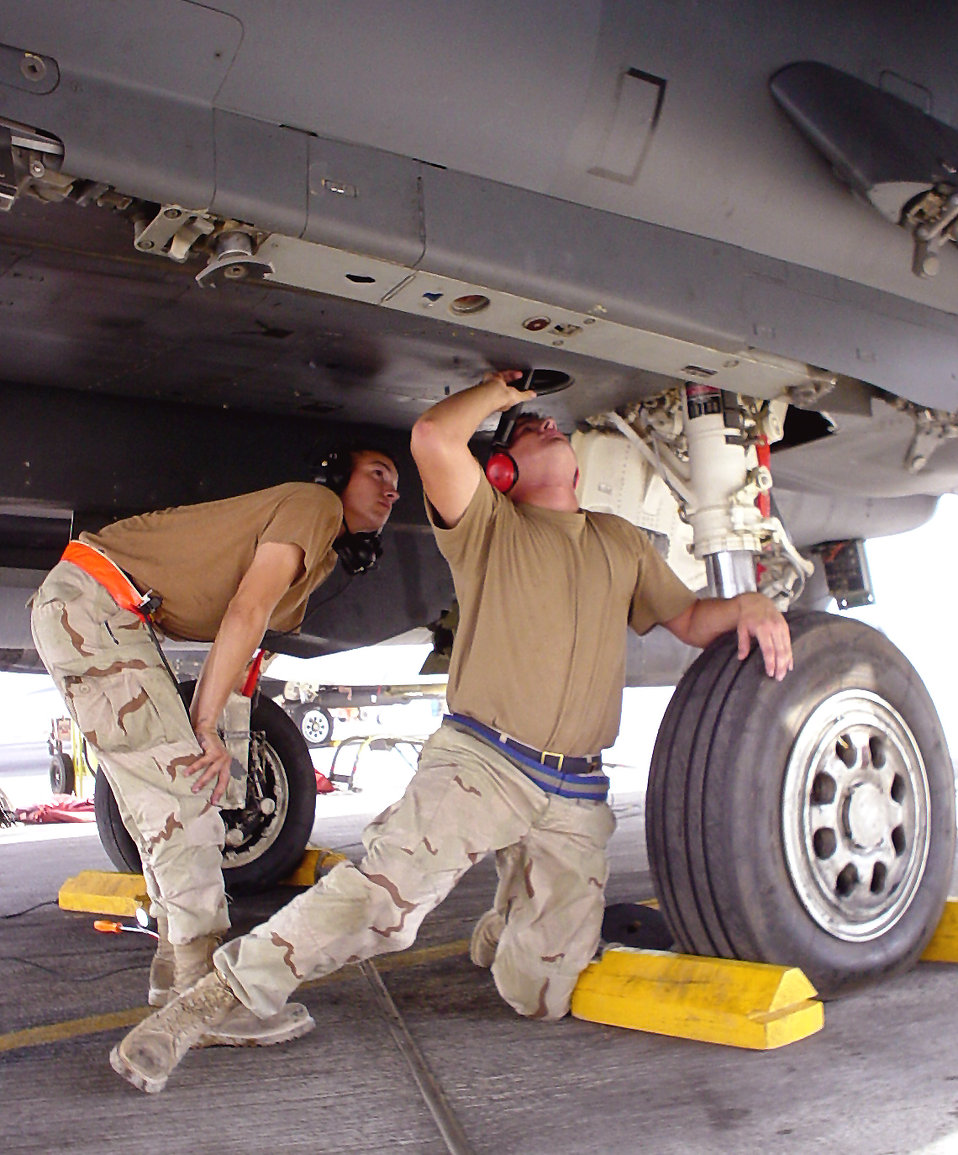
Routine engine inspection

SOUTHWEST ASIA -- Airman 1st Class Chris Gibson (left) and Staff Sgt. Eric Alder search for leaks during a routine engine inspection on an F-15E Strike Eagle at a forward-deployed location Sept. 24. Both crew chiefs are assigned to the 379th Expeditionary Aircraft Maintenance Squadron and are deployed from Royal Air Force Lakenheath, England.